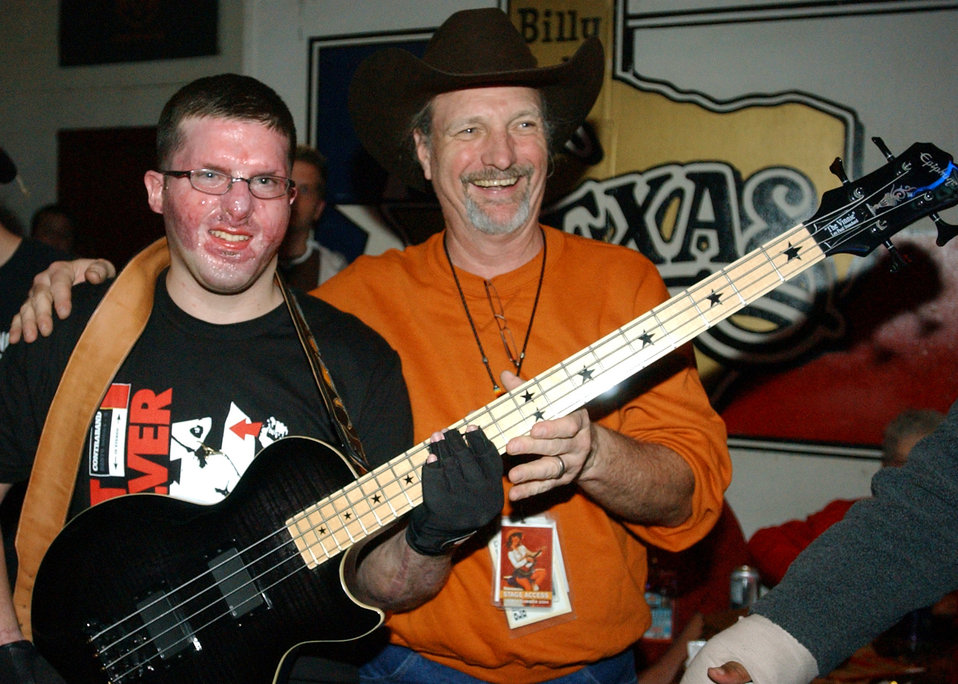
Airman prescribes dose of 'fun,' boosts morale

FORT WORTH, Texas -- Army Sgt. Joe Washam poses with bass player Bee Spears following a Willie Nelson concert here Nov. 12. Sergeant Washam received burn wounds in April while serving in Iraq.